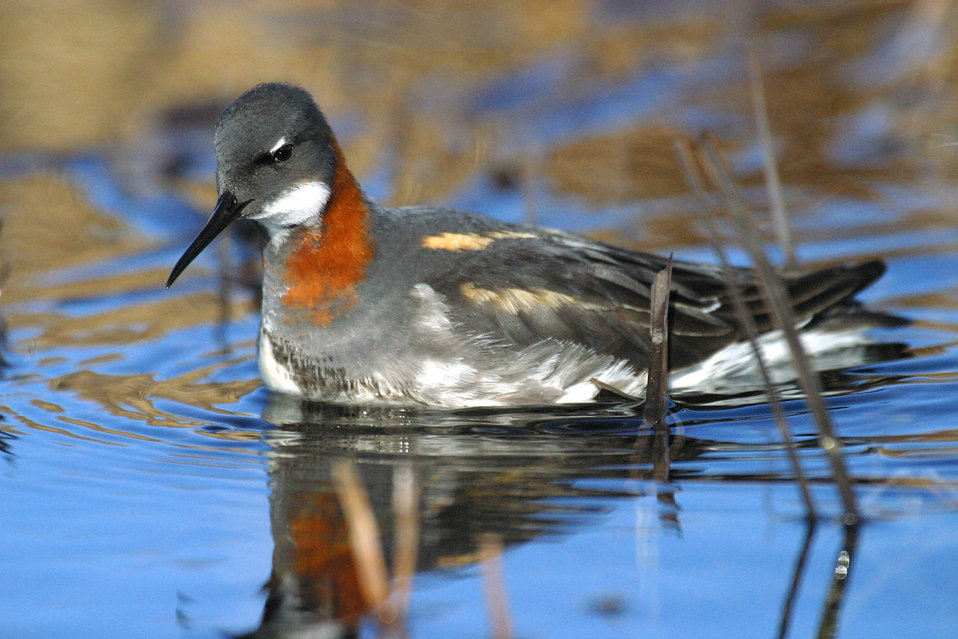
Red-Necked Phalarope

The red-necked phalarope is just one of the species at Blackwater National Wildlife Refuge that could be affected by climate change and sea level rise.